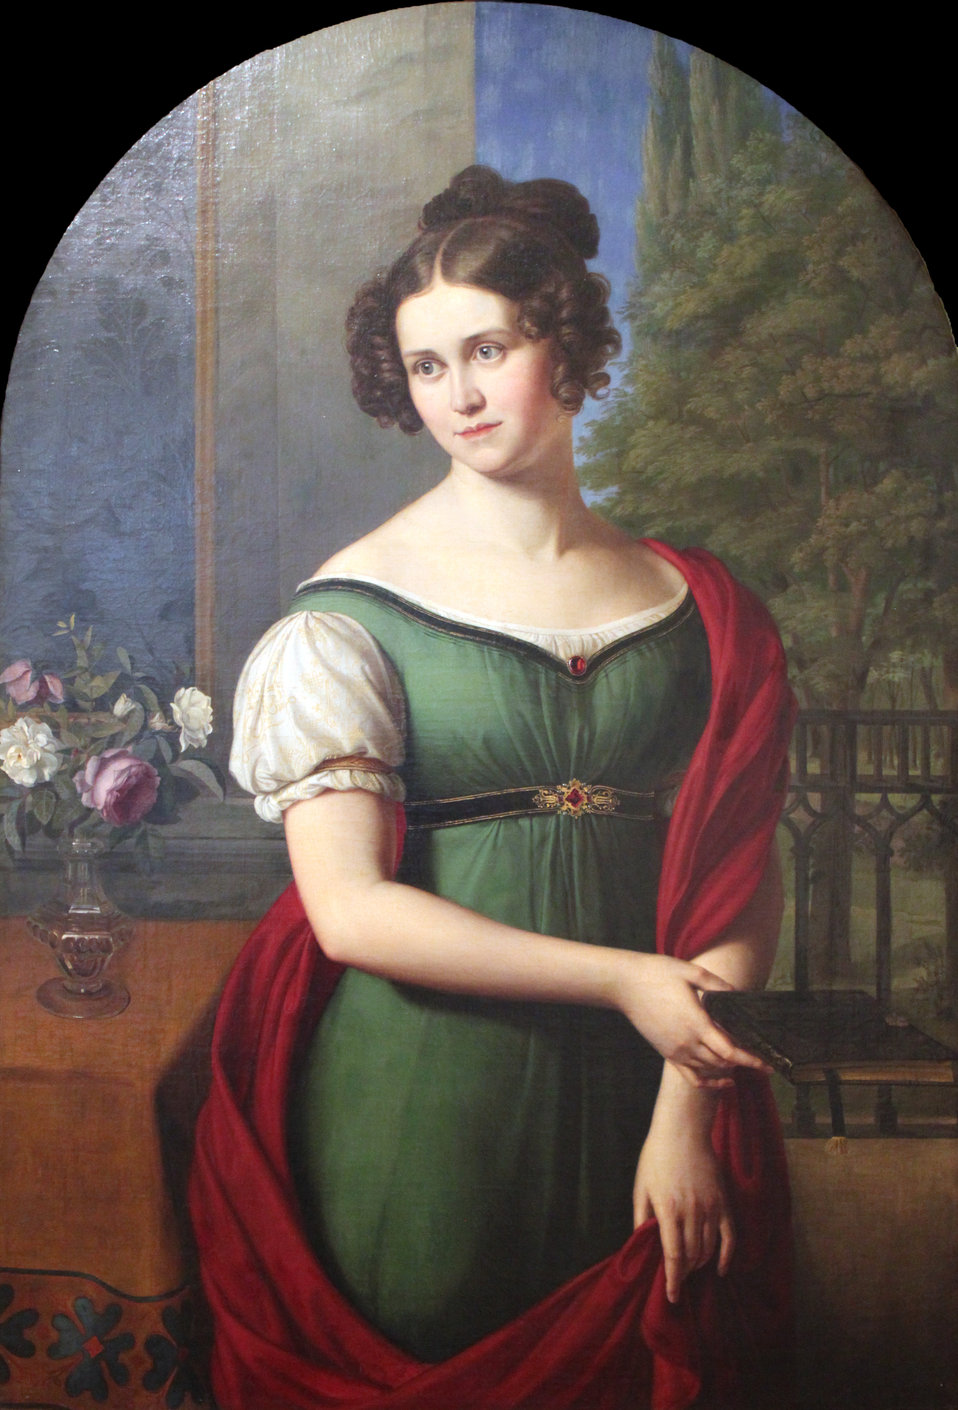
1823 Schadow Bildnis Lili Parthey anagoria